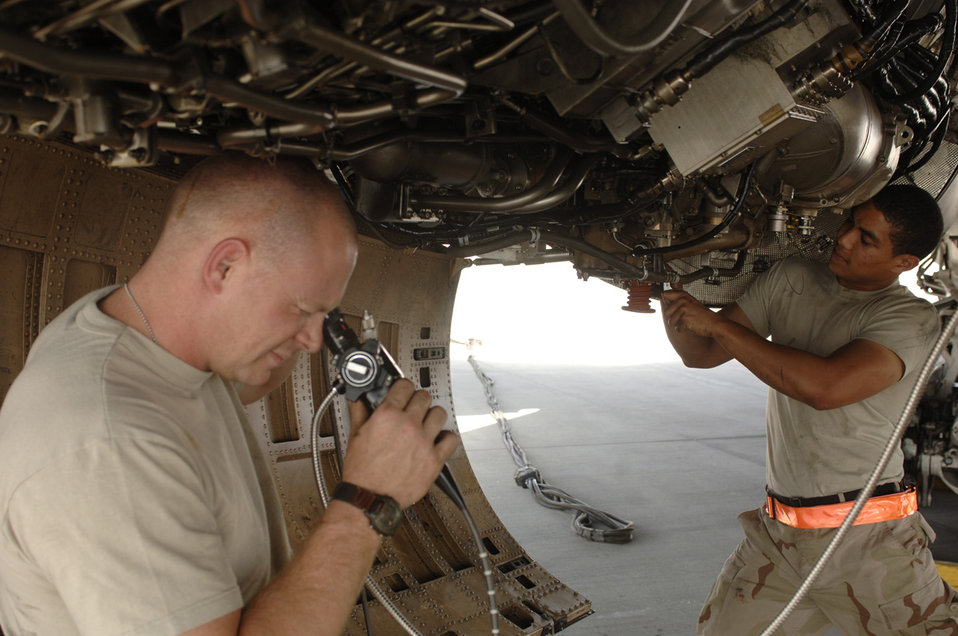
Bomber inspection

Staff Sgt. Shaun Bennet (left) and Senior Airman Maurice Williams, 379th Expeditionary Aircraft Maintenance Squadron jet engine technicians inspect B-1B Bomber internal compressor blades during an engine borescope inspection. In recent weeks, Airmen from the 379th EAMXS have supported the 34th Expeditionary Bomb Squadron's persistent presence in Iraq and Afghanistan to support increased operations.